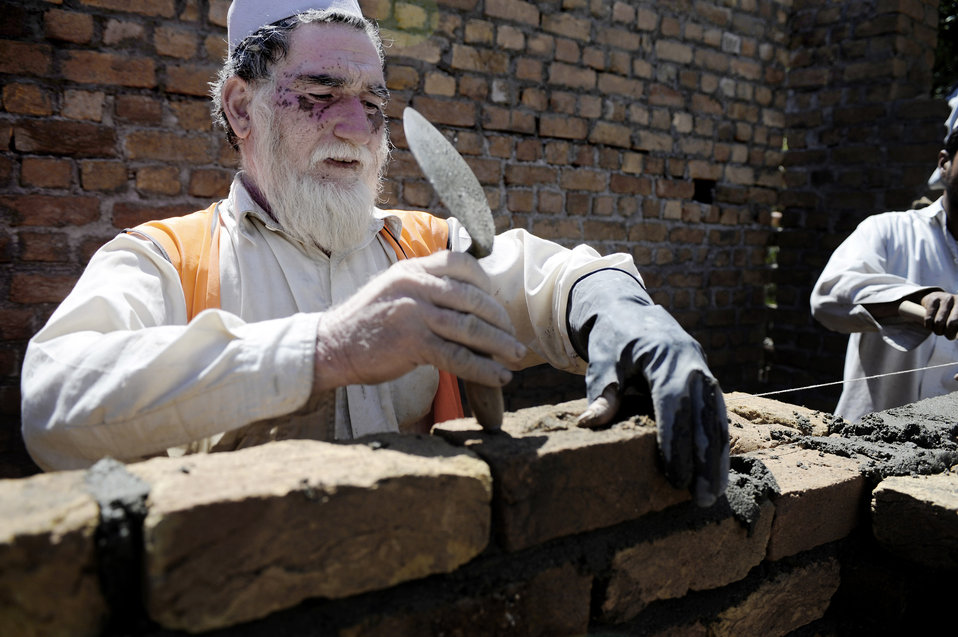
Afghanistan's future foundation

A local contractor spreads mortar for a development site May 30, in Nangarhar Province, Afghanistan. The development is monitored by the Nangarhar Provincial Reconstruction Team, Forward Operating Base Finley-Shields, Afghanistan. The PRT is responsible for development and reconstruction projects in Nangarhar Province. The projects are built by local and contractors and are designed to improve the livelihood of the people living in the area.